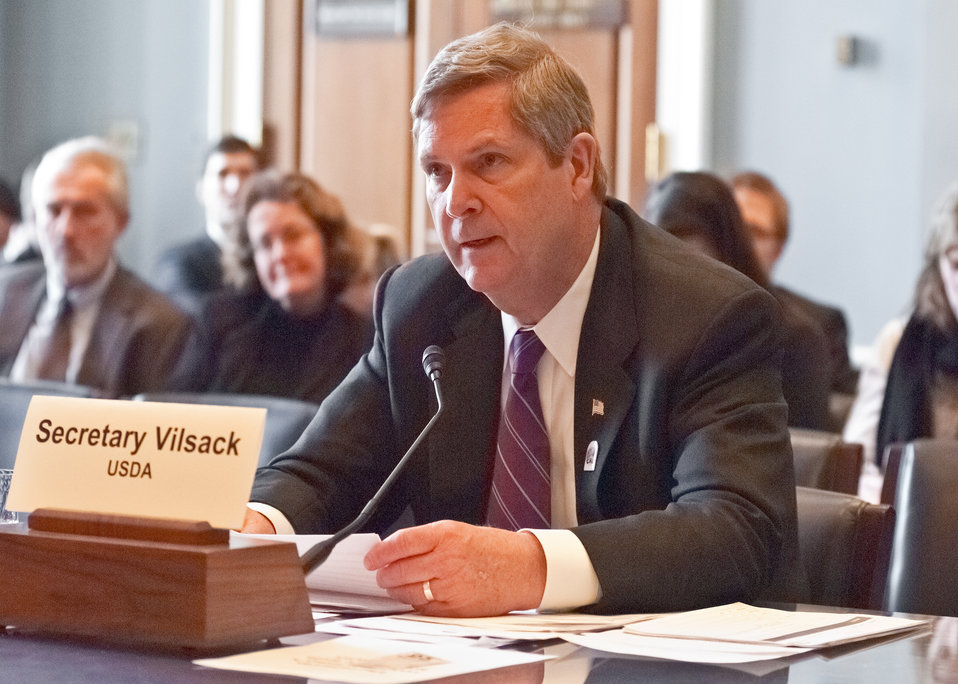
Agriculture Secretary Tom Vilsack testified on the “State of the Ag Economy” at a House Agriculture Committee hearing in the Longworth House Office Building in Washington, D.C., Thursday, February 17, 2011. Secretary Vilsack mentioned in his opening remarks, “As we enter 2011, the farm economy continues to remain strong with U.S. agricultural exports, farm cash receipts and net farm income projected at or above previous record levels.”